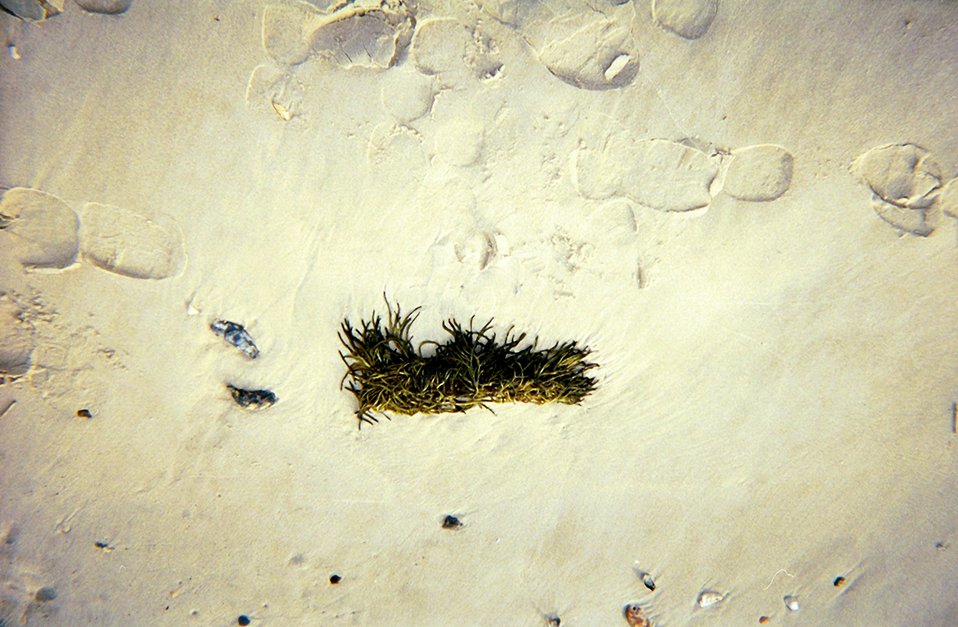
Algae cast upon the shore.